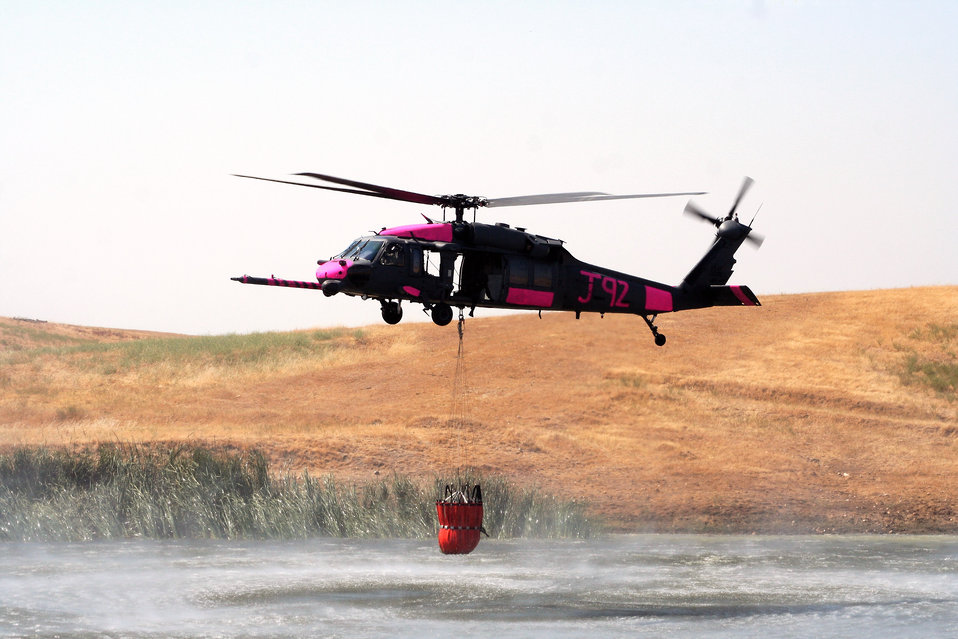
Fighting wildfires, saving lives

An HH-60G Pave Hawk hovers over a pond July 2 near Sacramento, Calif. The aircrews trained with water buckets to become certified for firefighting suppression duty. The HH-60G is from the 129th Rescue Wing of the California Air National Guard.